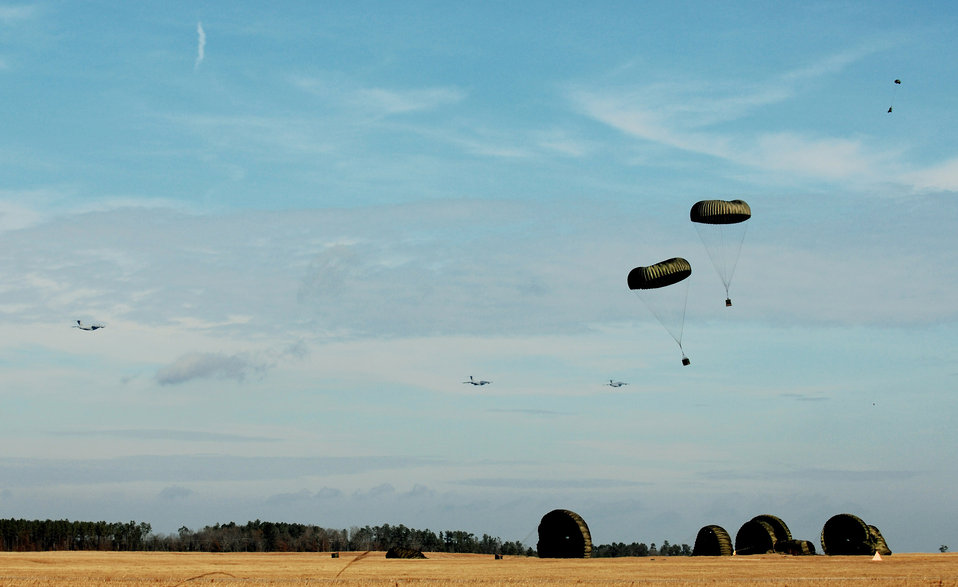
Show of force

Globemaster IIIs from the 437th and 315th airlift wings drop cargo at a remote airfield during a strategic brigade airdrop exercise involving a 13-ship formation Dec. 18 from Charleston Air Force Base, S.C. C-17s must be able to meet the Army's goal of airdropping a brigade's worth of troops and equipment (about 3,250 Soldiers and 3,450 tons of equipment). Charleston AFB aircraft currently account for half of the Air Force strategic brigade airdrop requirement.